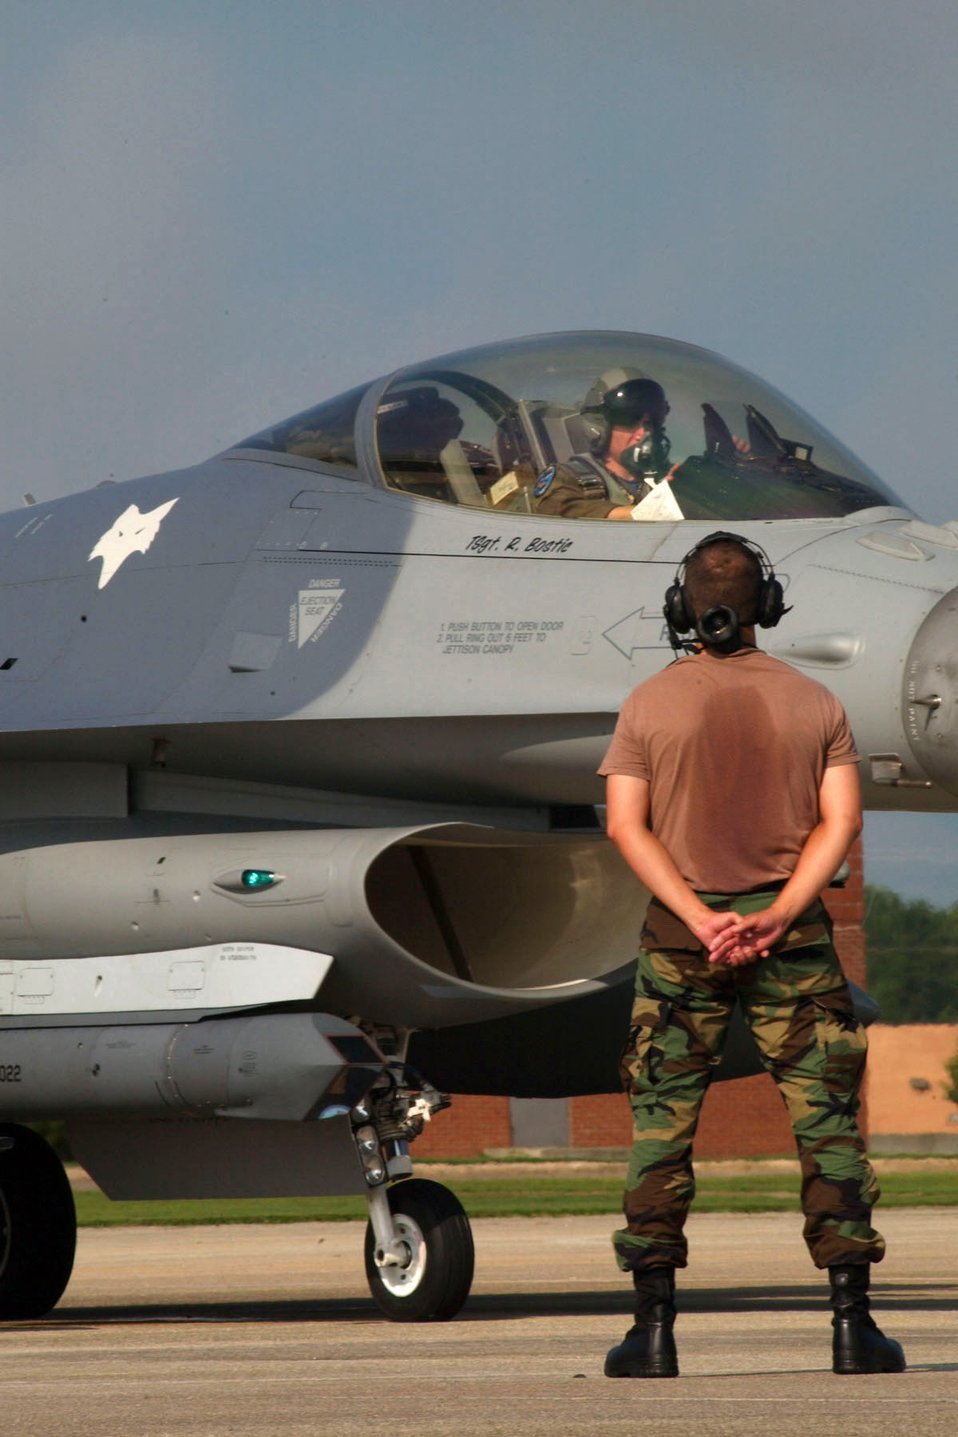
Guard support

A pilot and his crew chief await clearance for takeoff from McEntire Air National Guard Base, S.C., Aug. 28. Members of the 169th Fighter Wing are filling an Air Expeditionary Force role for Pacific Air Forces.